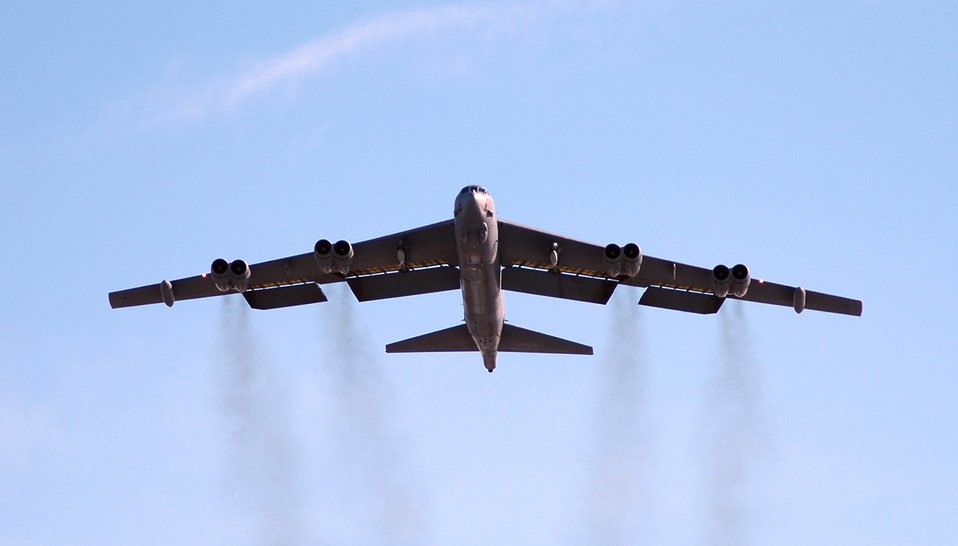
Missions begin with ATO

A B-52 Stratofortress from the 93rd Bomb Squadron at Barksdale Air Force Base, La., takes off from Eielson AFB, Alaska, on the first full day of Red Flag-Alaska 06-2, on Monday, April 24, 2006.